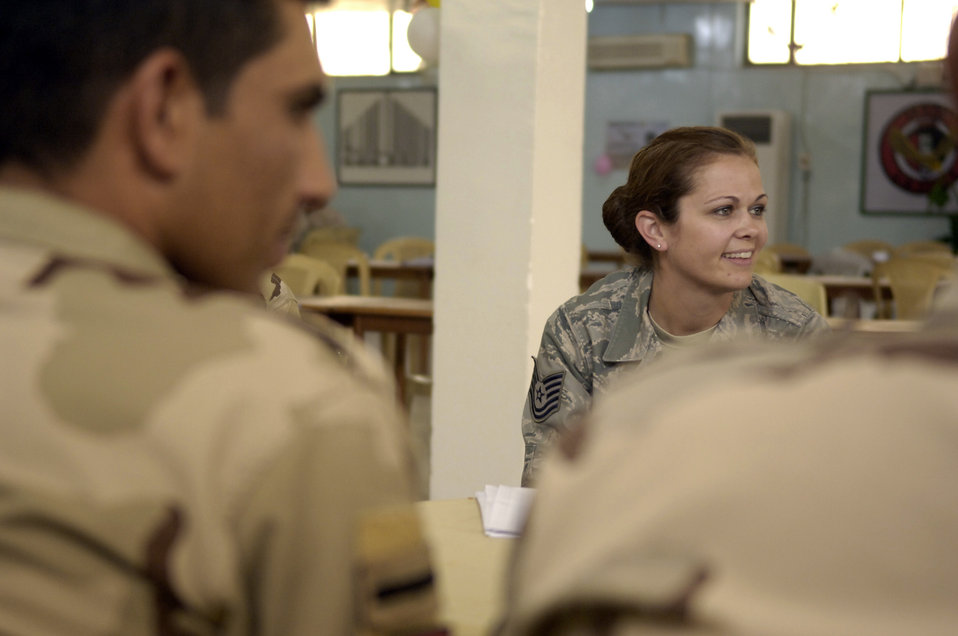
Building a better tomorrow, one NCO at a time

Tech. Sgt. Rebecca McKeever discusses the Air Force core value of